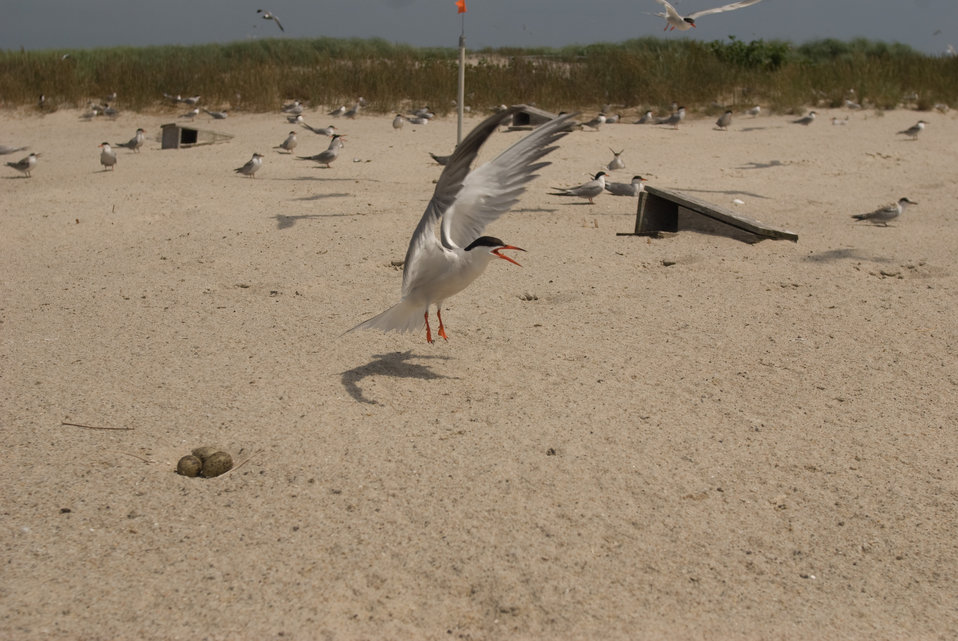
Tern at Monomoy National Wildlife Refuge

Tern landing at Monomoy National Wildlife Refuge in Massachusetts.